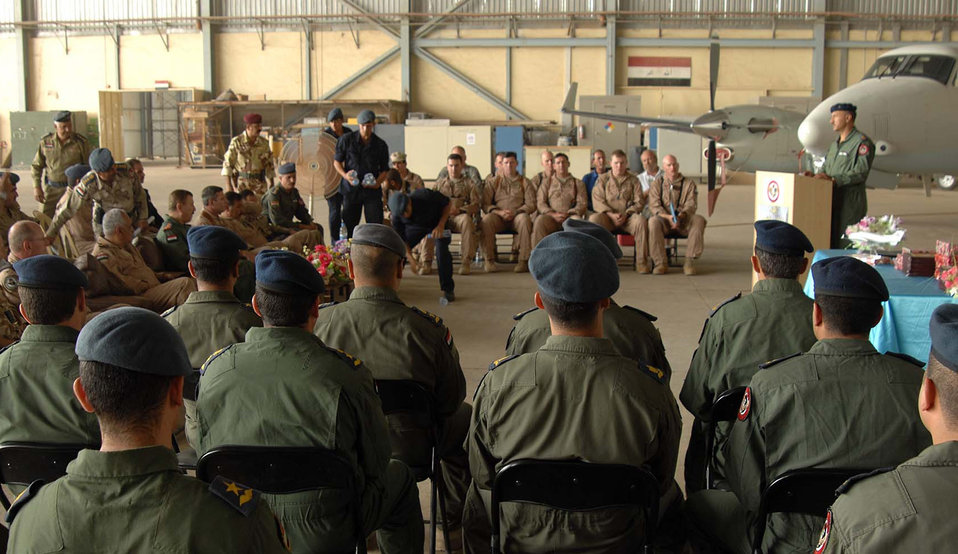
Operation Iraqi Freedom

Members of the first Iraqi intelligence, surveillance and reconnaissance class wait for their names to be called during their graduation ceremony at New Al Muthana Air Base, Iraq, May 17. The Iraqi King Air program, headed up by Air Force and Navy aircrew instructors, graduated four Iraqi pilots, seven co-pilots and five mission sensor operators after a year of training.